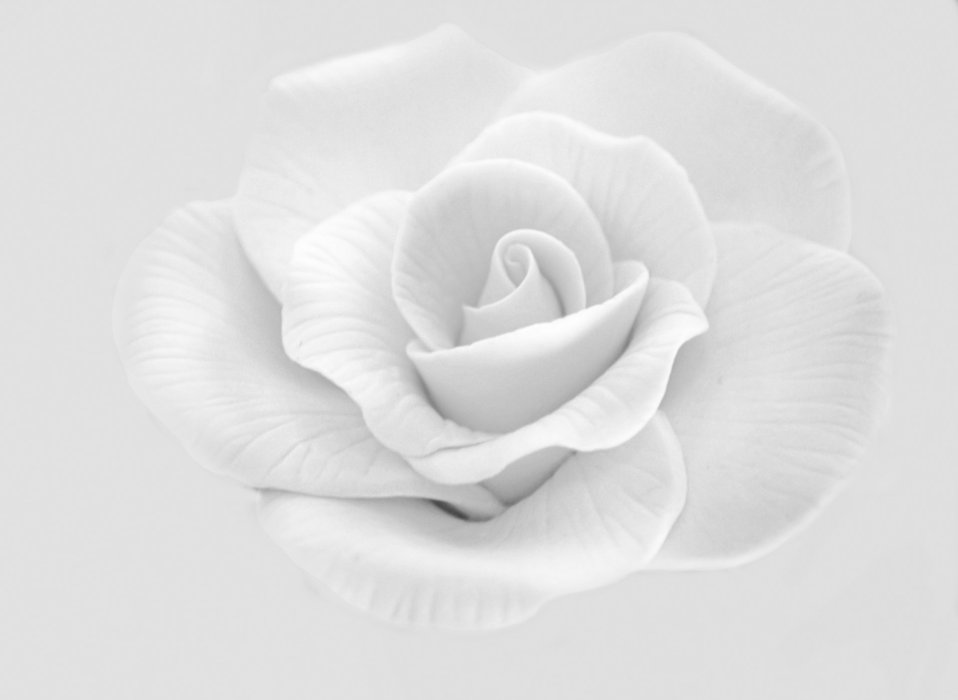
White rose - background.